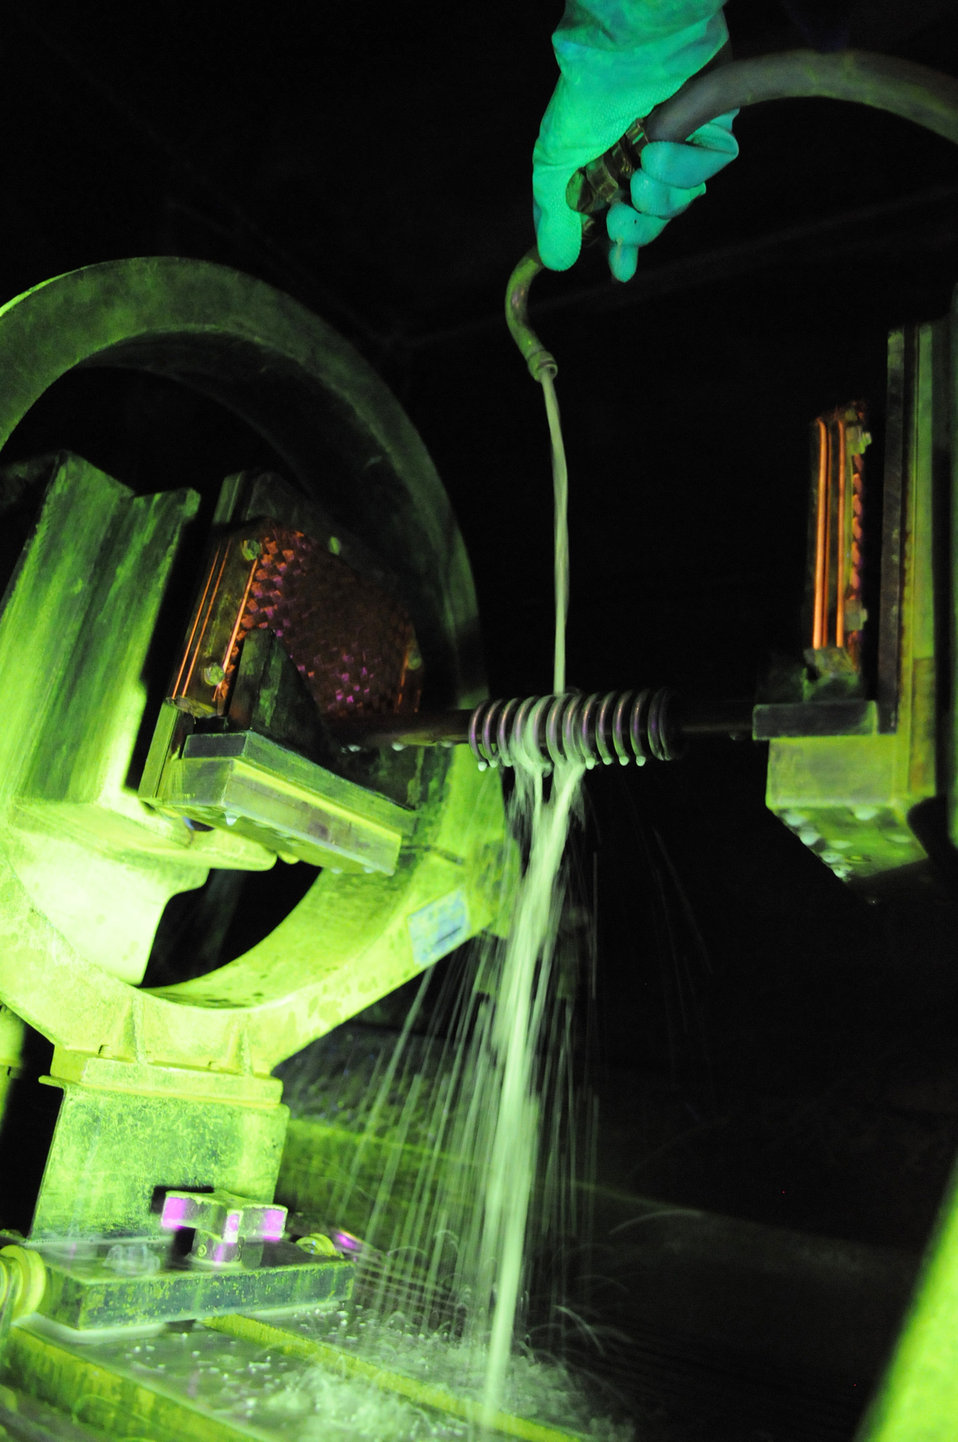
Black light inspection

Airman 1st Class Christopher Bovill gives a spring a microscopic iron bath with a magnetic particle machine at the non-destructive inspection shop March 9, 2010, at RAF Mildenhall, England. The machine uses magnetic current for the iron particles to attach to any cracks that might not be visible to the naked eye. Airman Bovil is a NDI technician with the 100th Maintenance Group.